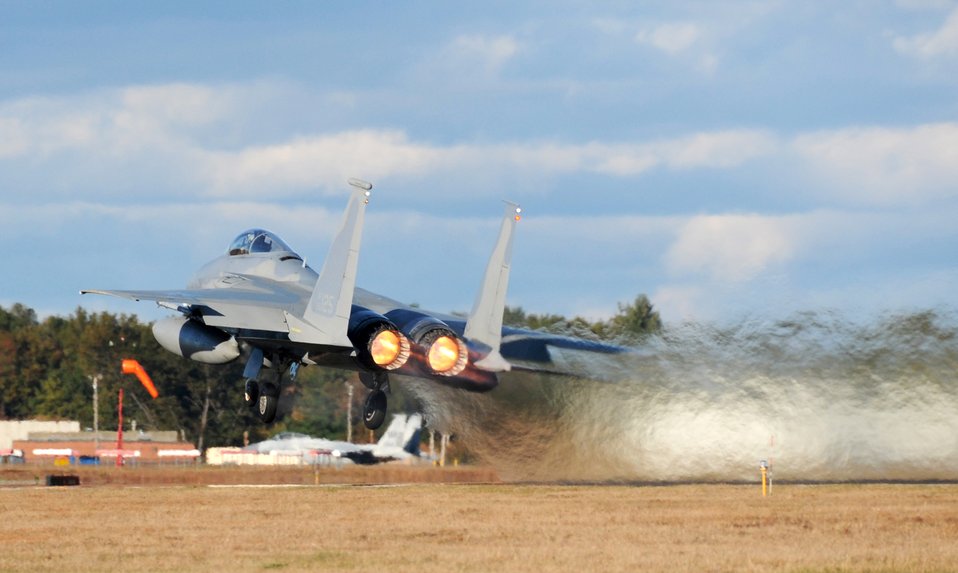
Training with the eagles

An F-15 Eagle takes off from Barnes Air National Guard Base, Mass., while participating in a training mission Oct. 21, 2010. The Massachusetts Air National Guard's 104th Fighter Wing provides air sovereignty alert support, protecting the northeastern United States.